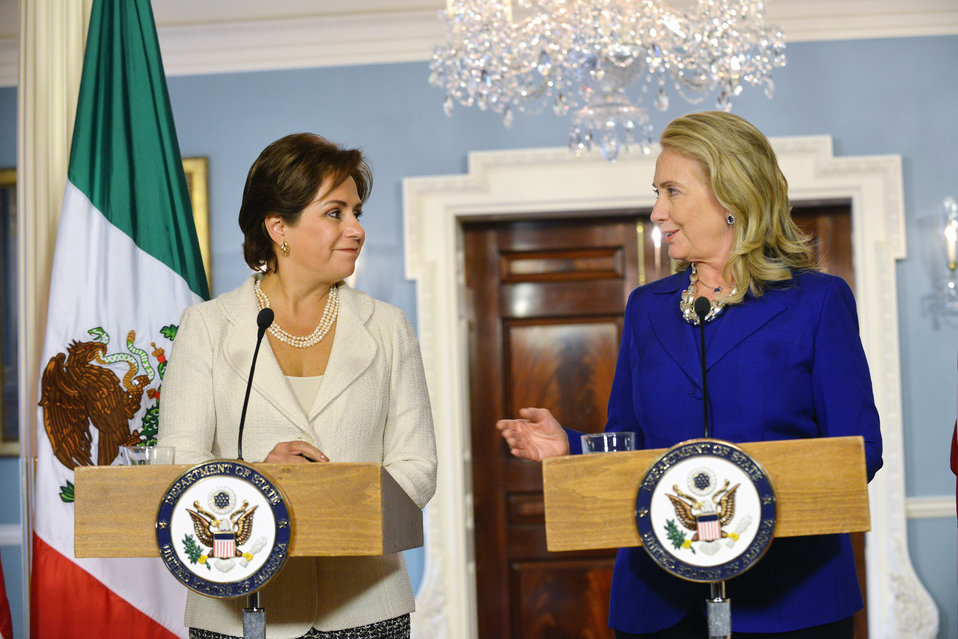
Secretary Clinton and Mexican Secretary of Foreign Relations Espinosa Address Reporters

U.S. Secretary of State Hillary Rodham Clinton and Mexican Secretary of Foreign Relations Patricia Espinosa hold a joint press conference at the U.S. Department of State in Washington, D.C., September 18, 2012.